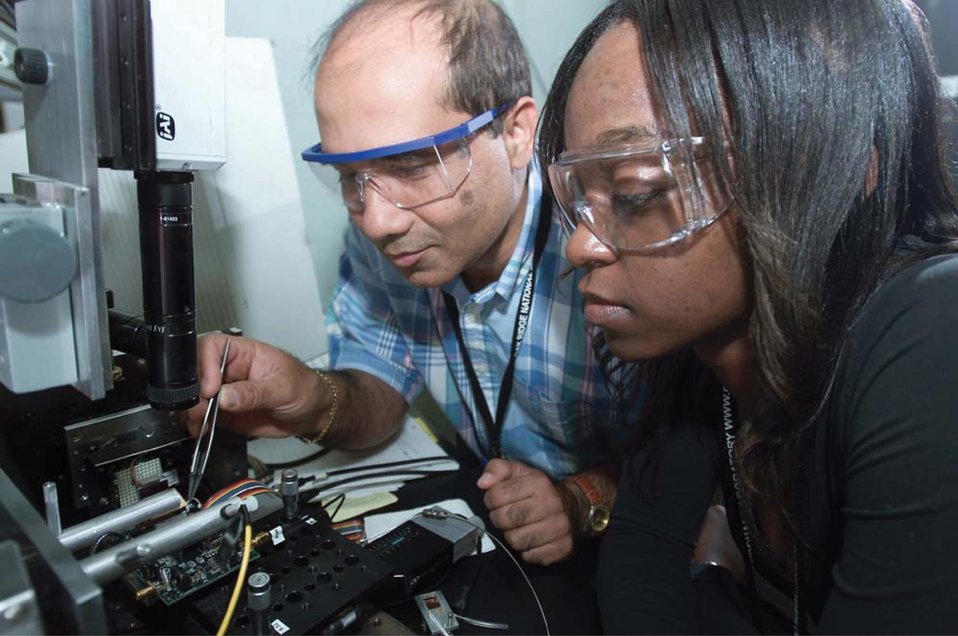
FACULTY MEMBER OF VIRGINIA STATE UNIVERSITY AND UNDERGRADUATE STUDENT PARTICIPANTS IN THE FAST PROGRAM AT ORNL.

THE FAST PROGRAM, JOINTLY SPONSORED BY DOE AND THE NATIONAL SCIENCE FOUNDATION, FOSTERS INSTITUTIONAL COLLABORATION BETWEEN COLLEGE FACULTY MEMBERS AND SCIENTISTS AT THE NATIONAL LABORATORIES. STUDENTS ARE PROVIDED WITH HANDS-ON RESEARCH EXPERIENCES IN AN EFFORT TO ENCOURAGE THE PURSUIT OF CAREERS IN SCIENCE AND TECHNOLOGY, ENGINEERING AND MATHEMATICS.